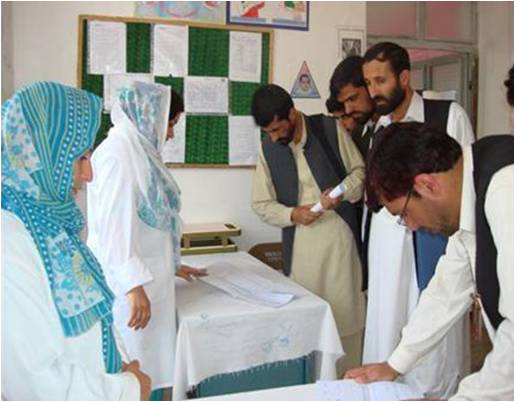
Improving the Health Of Health Management

HIRAT, Afghanistan - A four-day workshop for provincial health management teams from eight provinces began May 24 at the Hirat Provincial Health Directorate Training Center. The objective of the workshop, supported by USAID's ongoing capacity building program (Technical Support to the Central and Provincial Ministry of Public Health “Tech-Serve”), was to improve health services delivery systems by increasing the technical capacity of provincial health management teams. A total of 22 managers from provincial health offices in eight provinces participated in the workshop.